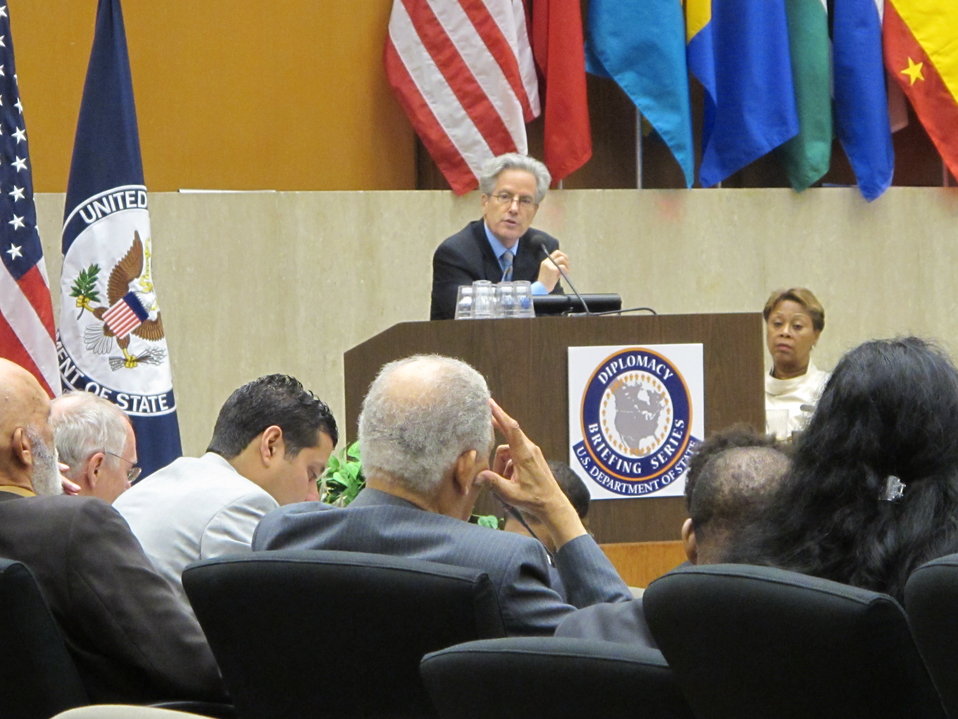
Assistant Secretary of State Valenzuela Addresses Caribbean Conference Participants

Assistant Secretary of State for the Bureau of Western Hemisphere Affairs, Arturo Valenzuela speaks on Caribbean policy at the U.S. Policy in the Caribbean Conference held at the U.S. Department of State in Washington, D.C., on June 27, 2011.